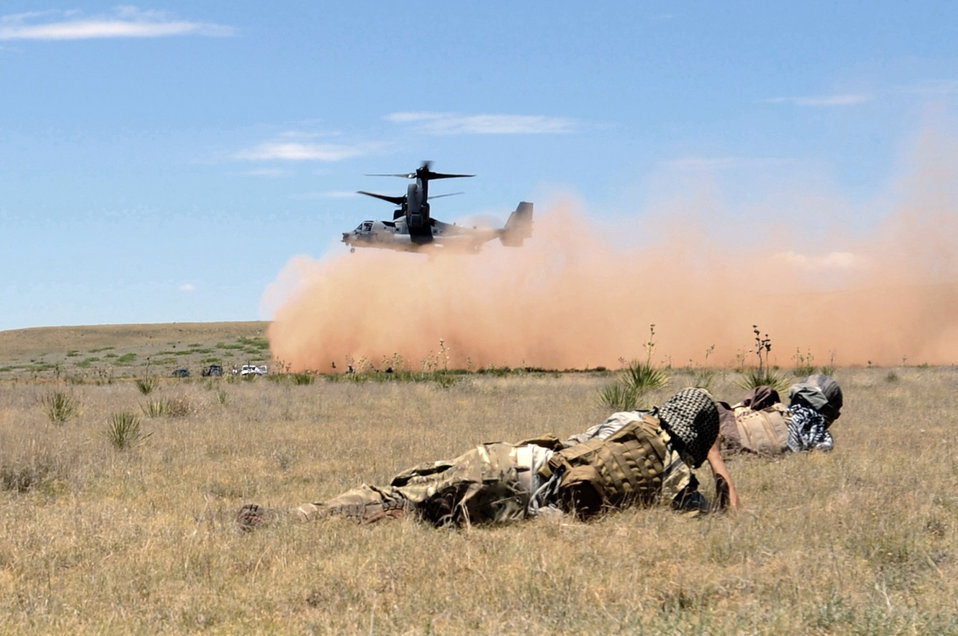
Ready to pounce

A CV-22 Osprey lands during a capabilities exercise as 'opposition' forces look on June 26, 2010, near Cannon Air Force Base, N.M.